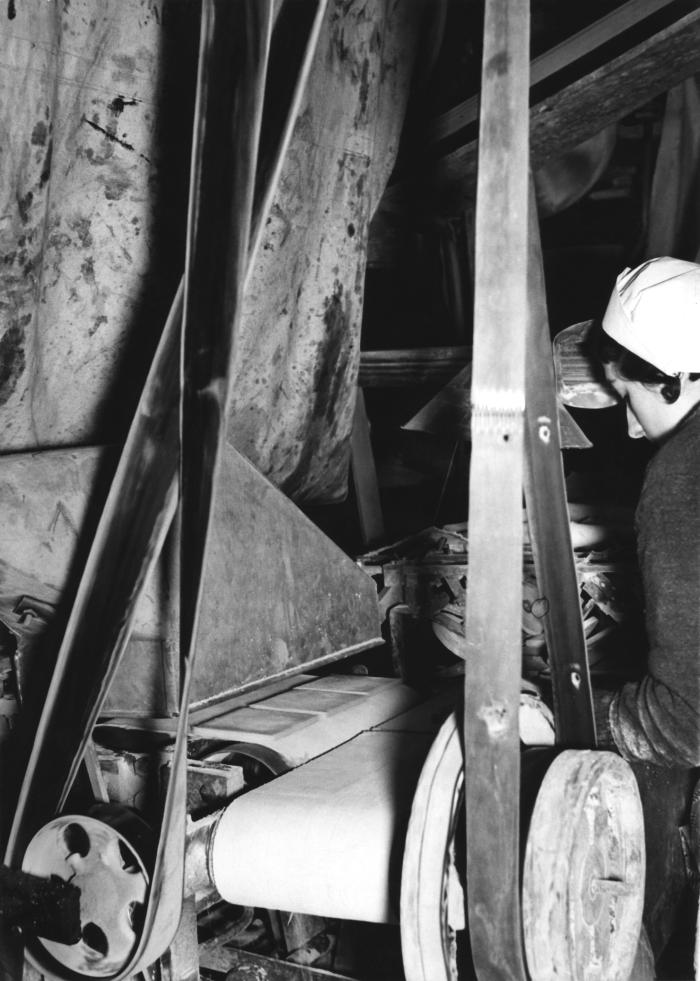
Provided by the Center for Disease Control's (CDC), National Institute for Occupational Safety and Health (NIOSH), this historic image depicted a female industrial worker who was inside a West Virginia tile-making factory at her tile-fettling machine. Fettling involves the removal of debris, and roughened protuberances from the edges of newly cast ceramic tiles. In so doing, these workers were prone to inhaling airborne silicate particulates, which lead to the chronic pulmonary disease known as pneumoconiosis, or silicosis, or more commonly known as 'grinders' disease', characterized by the formation of nodular fibrotic changes in the lungs. Note that this woman was not wearing a filtered breathing mask, increasing her chances of contracting silicosis. The image was published in the 'Public Health Bulletin', No. 244, 1939.